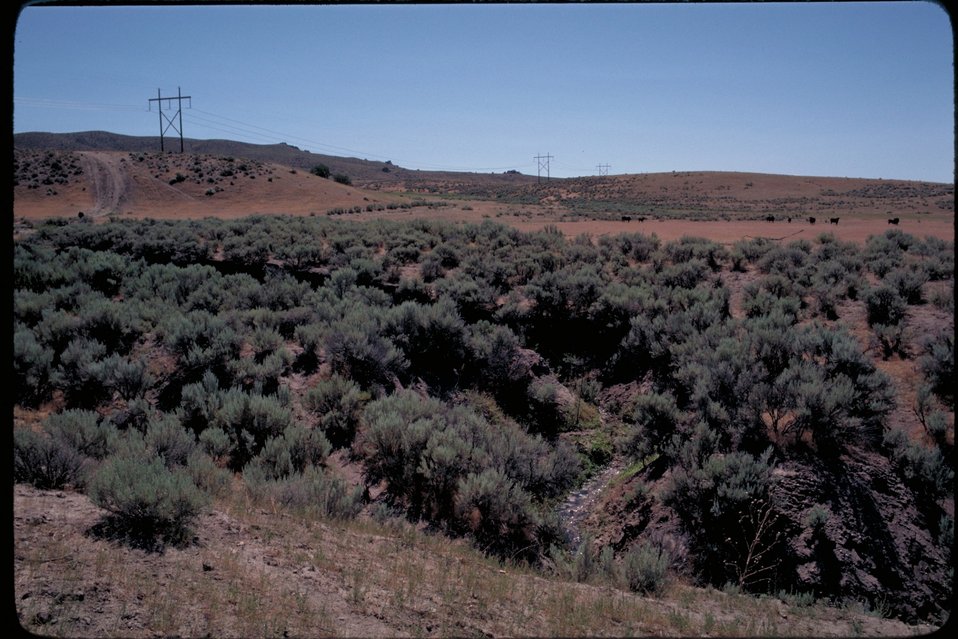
Oregon Trail Sole's Rest Area Lower Snake River District